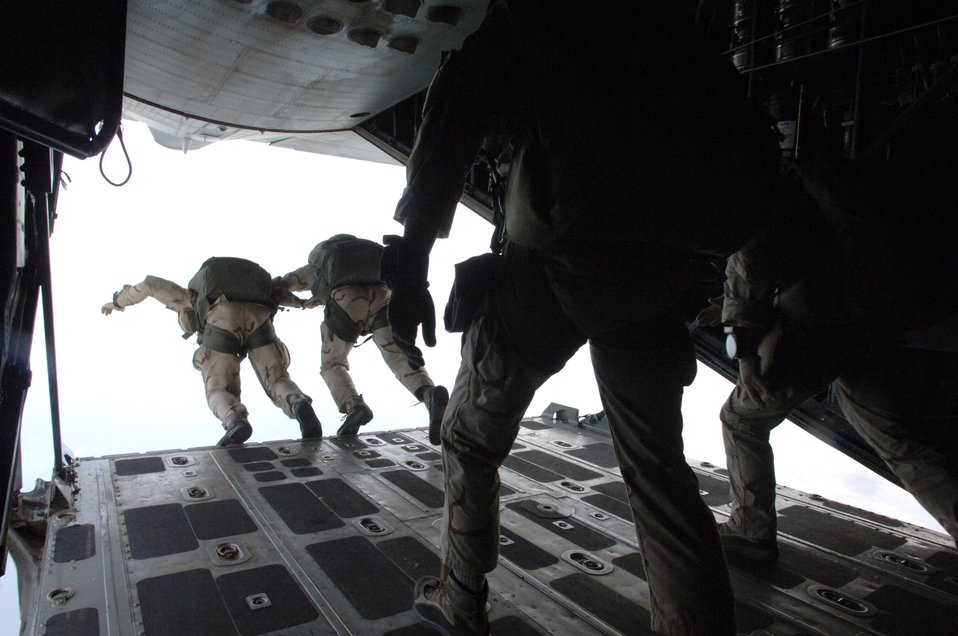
Pararescue jumpers train 'that others may live'

Pararescue jumpers begin their free-fall from 10,000 feet from the cargo ramp of a C-130 Hercules above Camp Lemonier, Djibouti. The training helps Airmen deployed from Davis-Monthan Air Force Base, Ariz., stay proficient in jump skills.